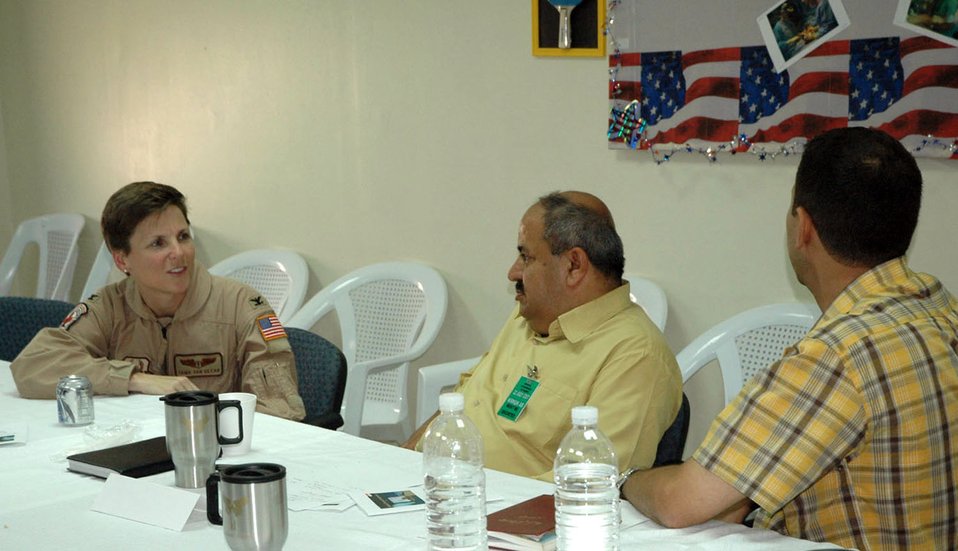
Medical symposium strengthens ties in Kirkuk

Col. Tama Van Decar, commander of the 506th Expeditionary Medical Squadron, talks with the deputy director general of Kirkuk's Ministry of Health, Dr. Burham, and another local Iraqi physician July 22 during a medical symposium at Kirkuk Regional Air Base, Iraq. The symposium brought eight physicians from downtown to the base to meet with about 20 U.S. Air Force and Army medical providers, and featured discussions on how to transfer Iraqi patients seen on base to downtown hospitals.